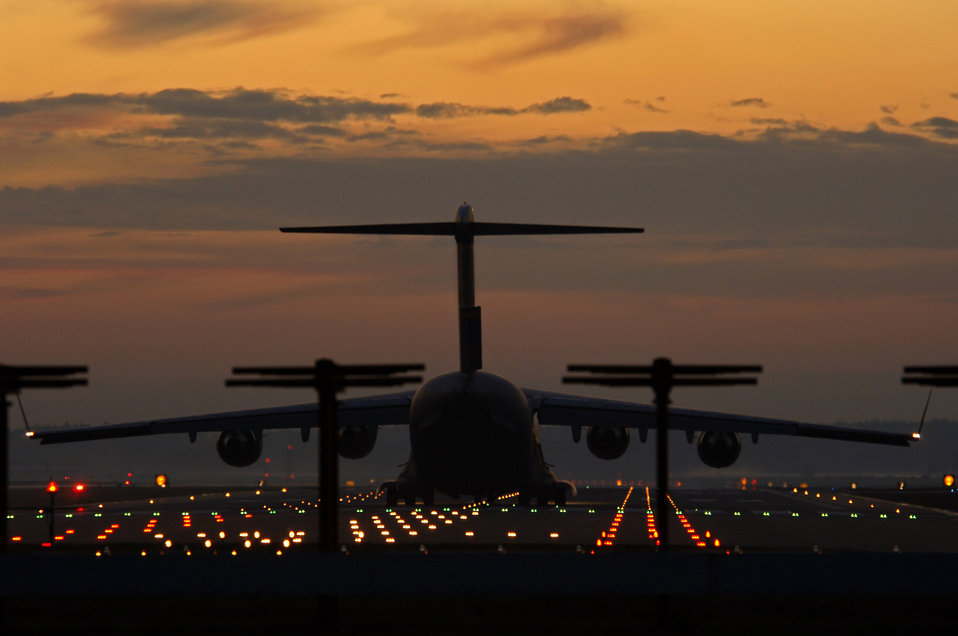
The sky is the limit

A C-17 Globemaster III prepares for takeoff Nov. 3 at Ramstein Air Base, Germany. Ramstein AB officials handle more than 85 aircraft operations daily.